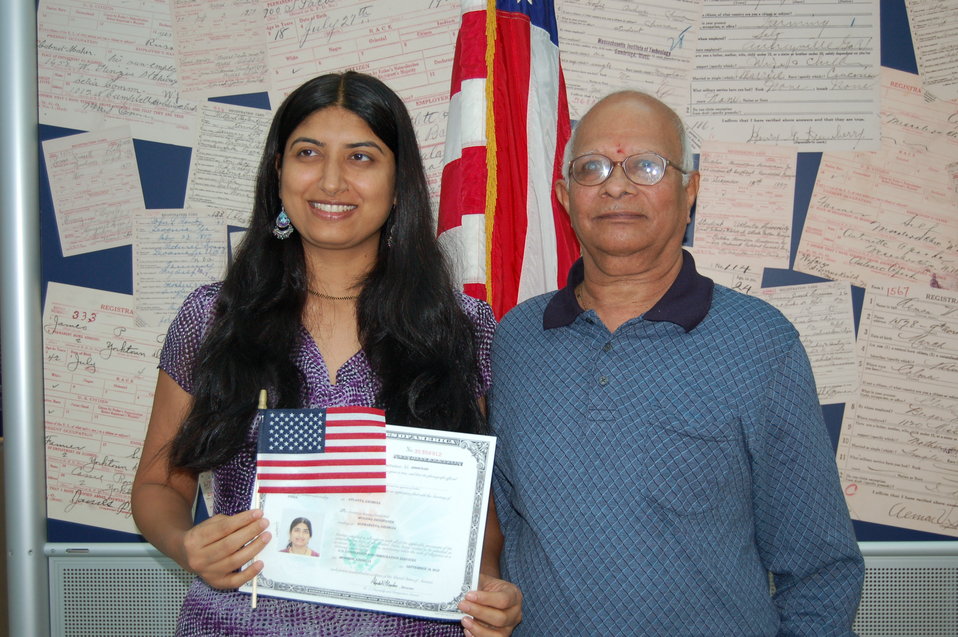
New Citizens